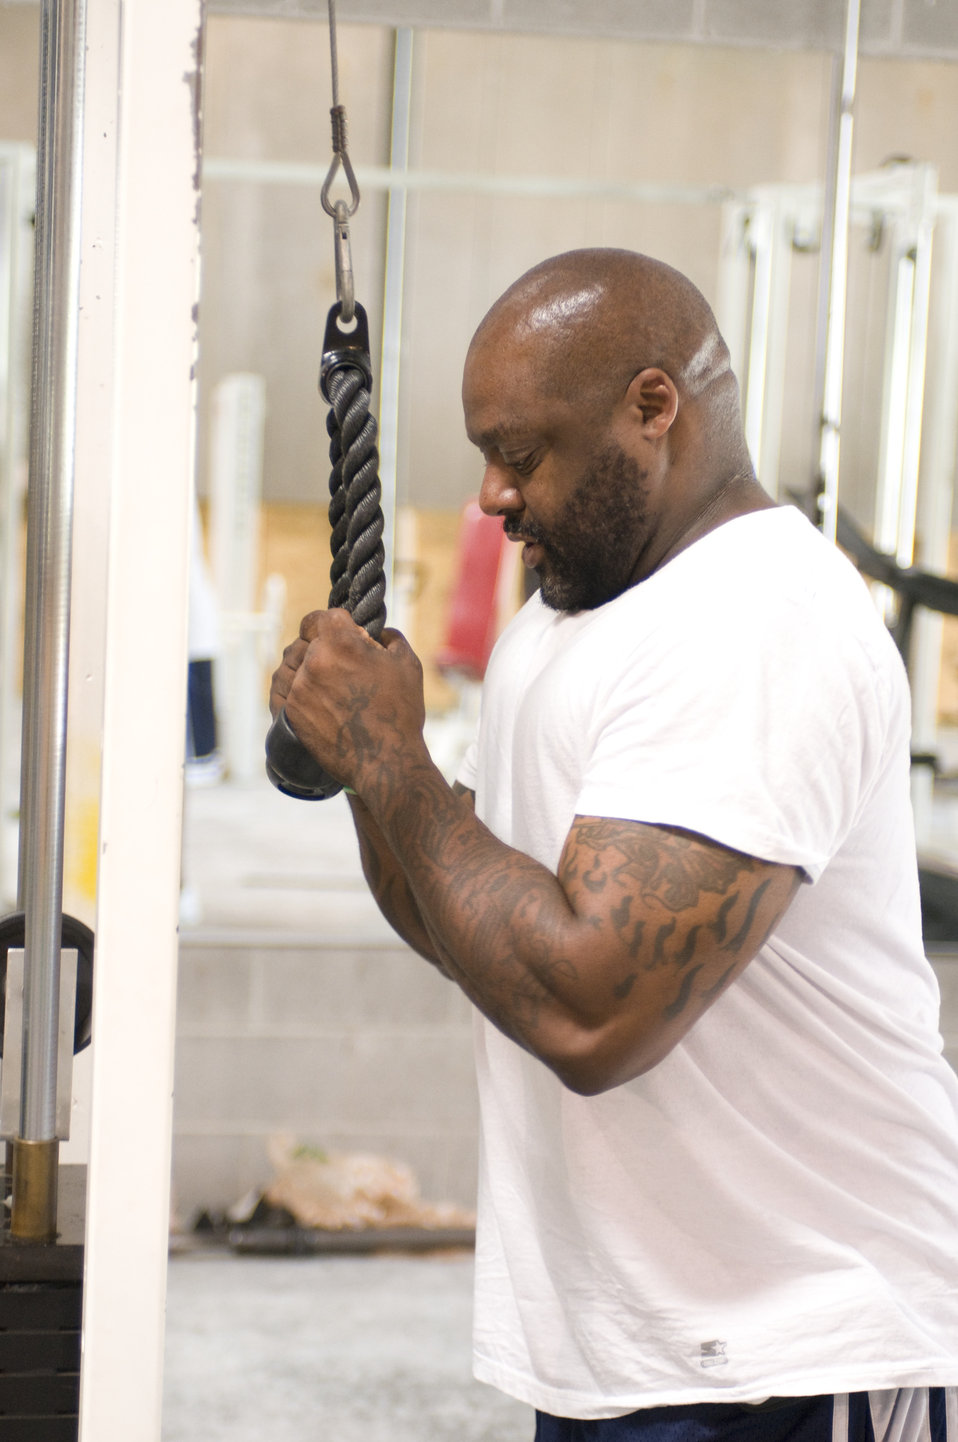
The man pictured here from a left side view, was inside a gymnasium performing various strength-training exercises. At this point of his routine, he was performing a set of what are known as 'pull-downs'. With both arms flexed at the elbows, this exercise calls for the participant to grasp both ends of a very thick rope directly in from of his/her chest. The rope is attached to a weighted cable. The arms are then slowly fully-extended, hands to waist level. Then to complete the exercise, the arms are slowly returned to the flexed position, with both hands once again at chest level. Hopefully, he was also keeping well hydrated during his exercise regimen by drinking fresh water during his workout.